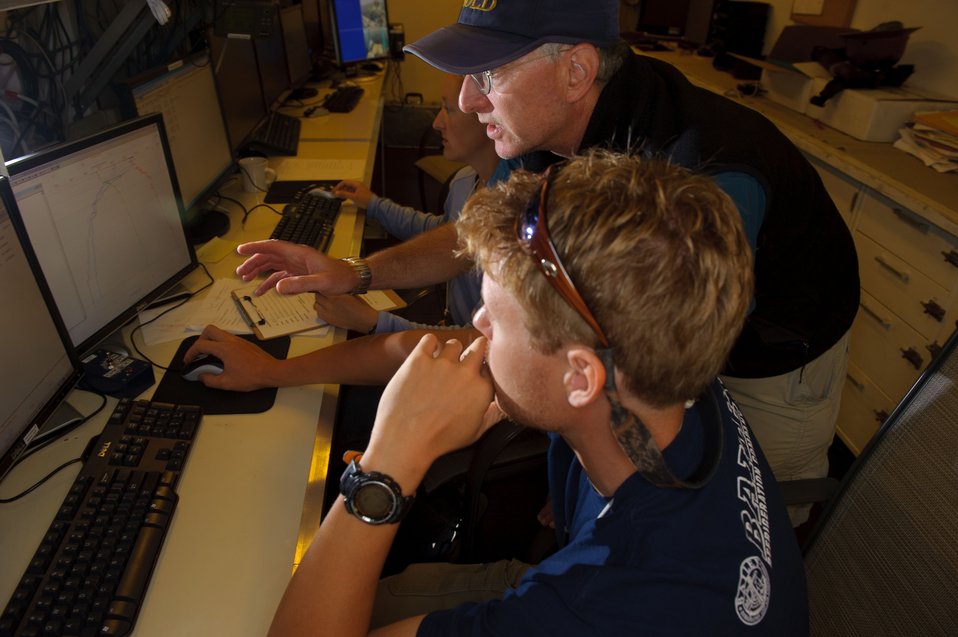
August 6, 2011 Watching feedback from the CTD on it's way to the bottom